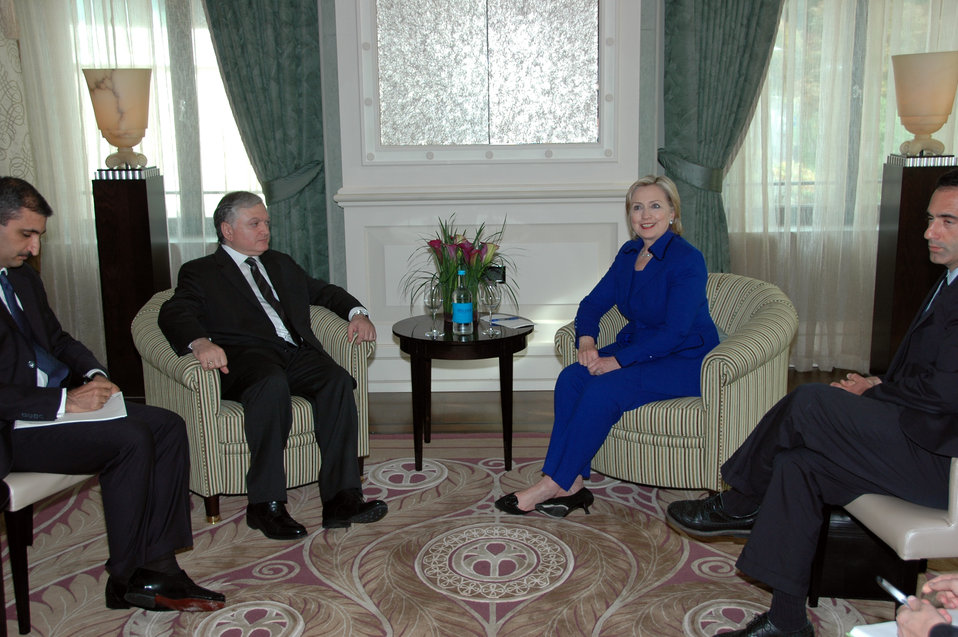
Secretary Clinton Meets With Armenian Foreign Minister

U.S. Secretary of State Hillary Rodham Clinton with Armenian Foreign Minister Edouard Nalbandian in Zurich, Switzerland October 9, 2009.